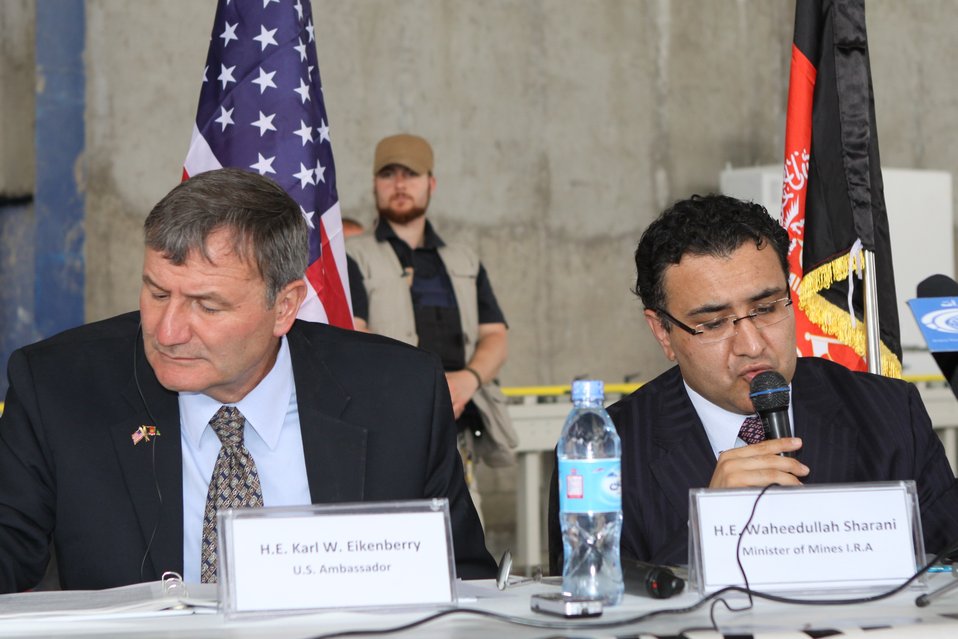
100525 Hirat Marble Conference 363